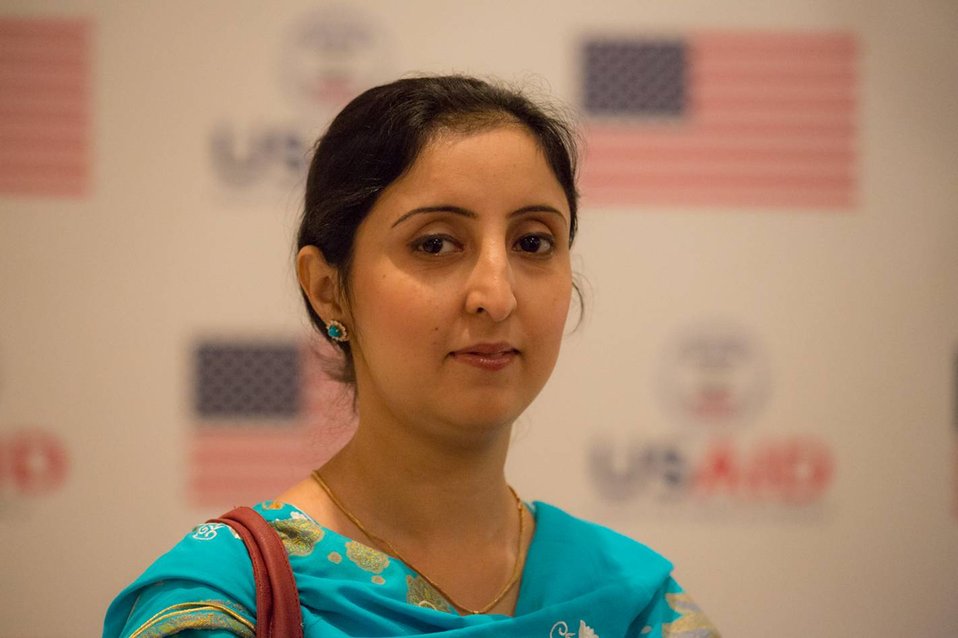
US-funded Study Tour Offers New Ideas for Addressing Gender-Based Violence

Islamabad, September 6, 2012 - Khalida Parveen, from Shaheed Benazir Bhutto Crisis Center, Jacobabad, at the event.